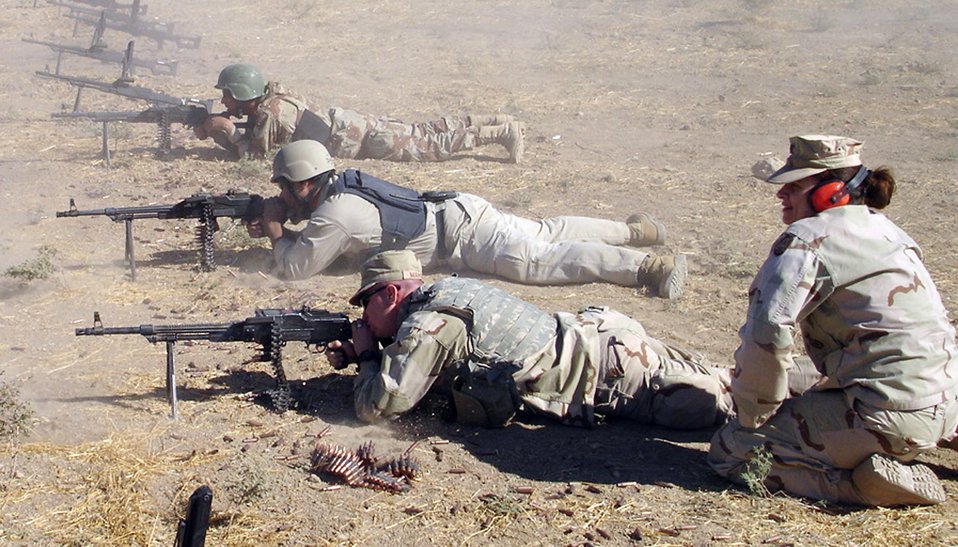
Instructing Iraqi trainees

AL KASIK, Iraq -- Capt. LeeAnn Roberts instructs Iraqi trainees and a coalition Soldier on proper firing techniques at the Al Kasik Training Base firing range. She is the first female coalition military assistance training team instructor assigned to the base, and the only female out of 8,000 assigned personnel.